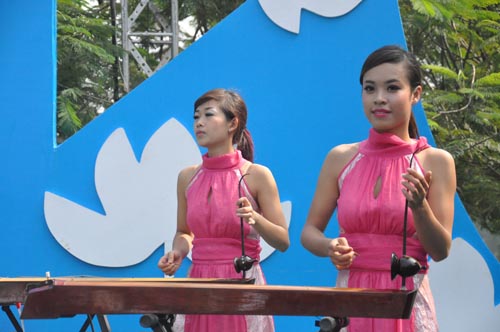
Traditional music brightens Hanoi's 1,000th anniversary celebrations.